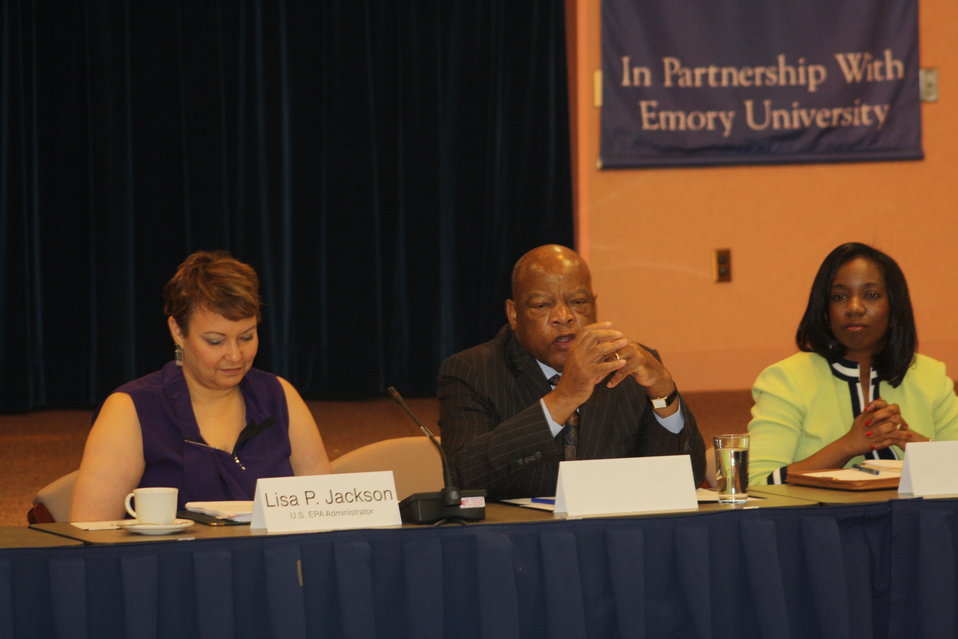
Faith-Based and Neighborhood Partnership launch at Atlanta's Carter Center